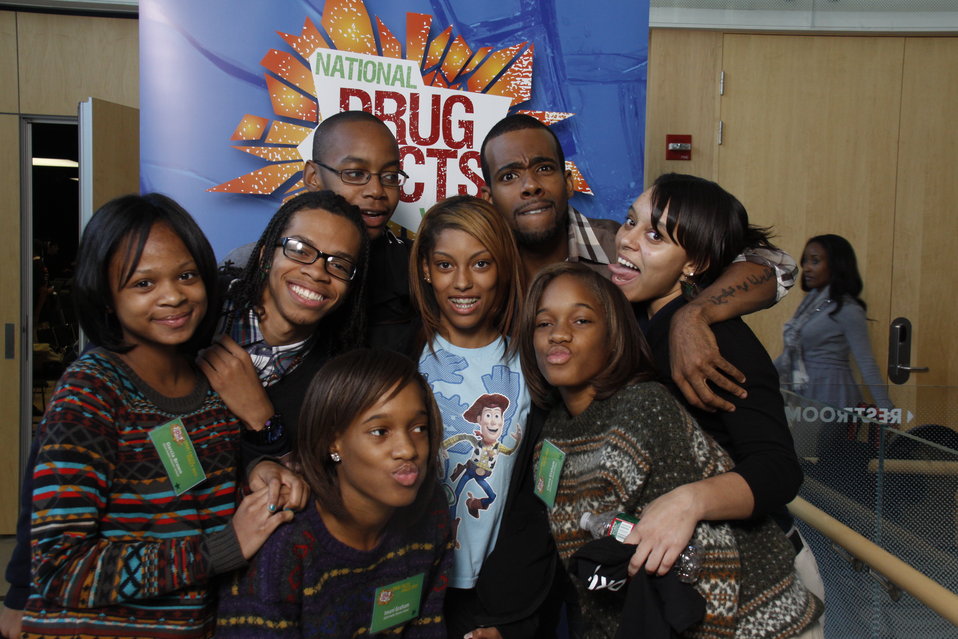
NDFW Mentor Event